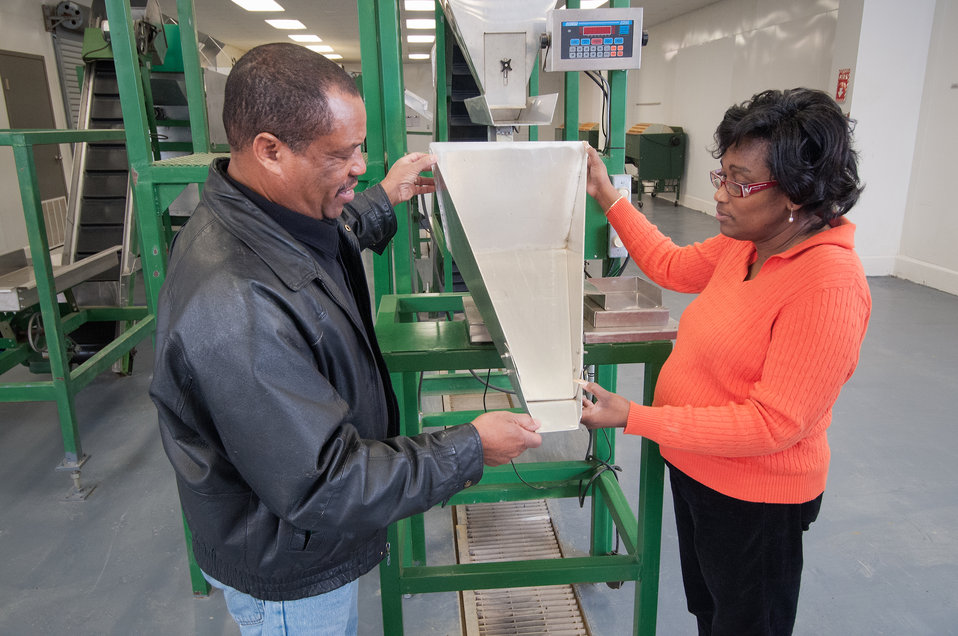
University of Arkansas at Pine Bluff, Agriculture Demonstration Outreach Center in Marianna, AR representatives Ernest Bradley and Iris Crosby discuss the operation of a purple hull pea processing equipment the Arkansas Delta Seeds of Change (ADSOC) was able to purchase with a U.S. Department of Agriculture (USDA) Rural Development (RD) Rural Business Enterprise Grant (RBEG) on Mar. 5, 2013. USDA in partnership Heifer International (an International organization whose mission is to work with communities to end hunger and poverty and care for the Earth) and various for-profit and non-profit organizations have put in motion the “Seeds of Change Implementation Plan” to use sustainable agriculture to build food systems in the Arkansas Delta. The program has evolved into the ADSOC Initiative. The ADSOC Initiative assists producers with technical assistance for crop production, management, harvesting, food security, value added products and marketing options and provides access to specialized production and marketing equipment.